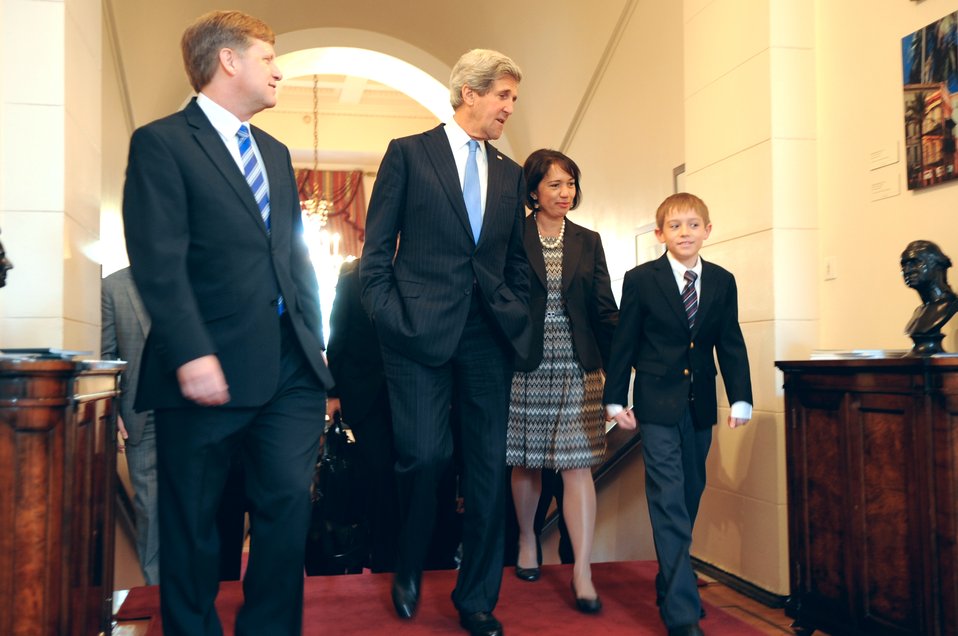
Secretary Kerry Walks With Ambassador McFaul and his Family

U.S. Secretary of State John Kerry greets U.S. Ambassador to Russia Michael McFaul, his wife, Donna Norton, and their son Luke, upon arriving at the U.S. Ambassador's residence, the Spaso House, in Moscow, Russia, on May 8, 2013.